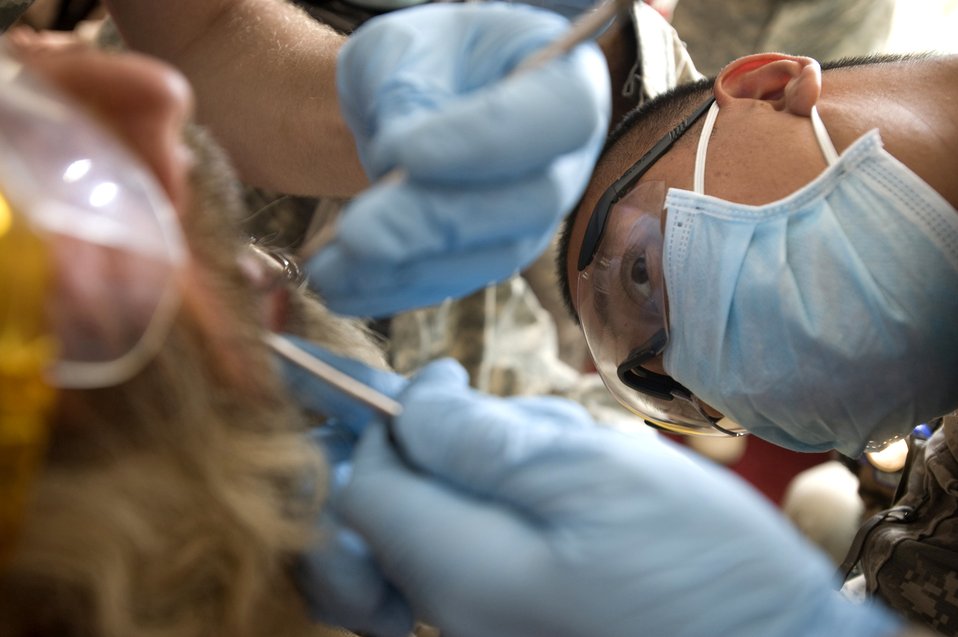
Servicemembers provide dental training for Afghans

Staff Sgt. Nestor Albalos assists a dental surgery for an Afghan during a village dental outreach visit Oct. 11 in Zabul, Afghanistan. The visit was hosted by the Zabul Provincial Reconstruction Team. Sergeant Albalos, a PRT combat medic, assisted with the removal of teeth and sanitized tools during the visit. Sergeant Albalos, a native of Stockton, Calif., is from Travis Air Force Base, Calif.